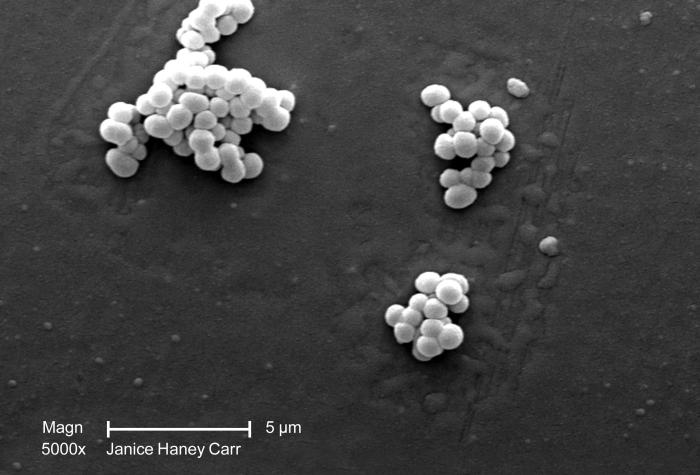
Under a moderately-high magnification of 5,000X, this scanning electron micrograph (SEM) revealed several small clusters of Gram-positive, beta-hemolytic Group C Streptococcus sp. bacteria.